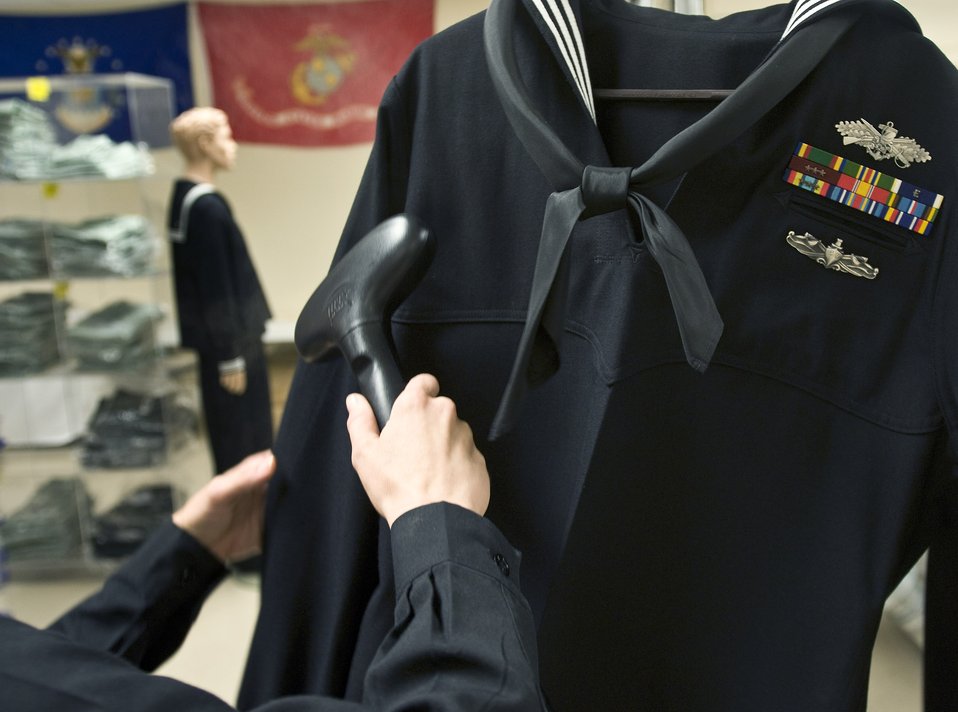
Dignified Transfer of Remains

Petty Officer 2nd Class Danielle Van Orden steam cleans a U.S. Navy uniform for a fallen sailor March 31. Petty Officer Van Orden is the Navy and Marine Corps liaison for the uniform section of the Air Force Mortuary Affairs Operations Center at Dover Air Force Base, Del. Service liaisons prepare uniforms for remains and work with military escorts for the dignified transfer of remains process.